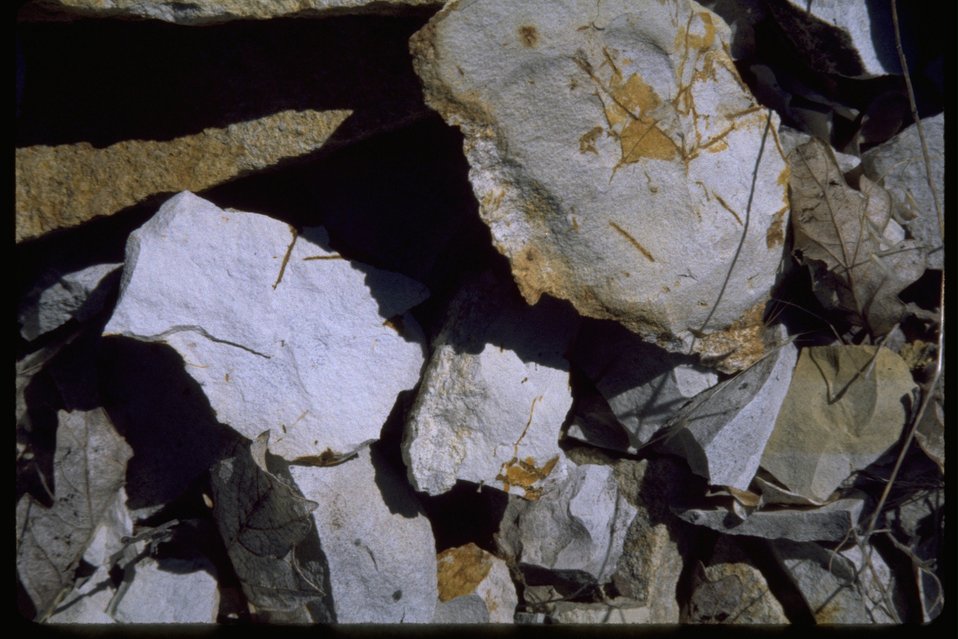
A surface fossil on Pilot Rock. (ACEC)